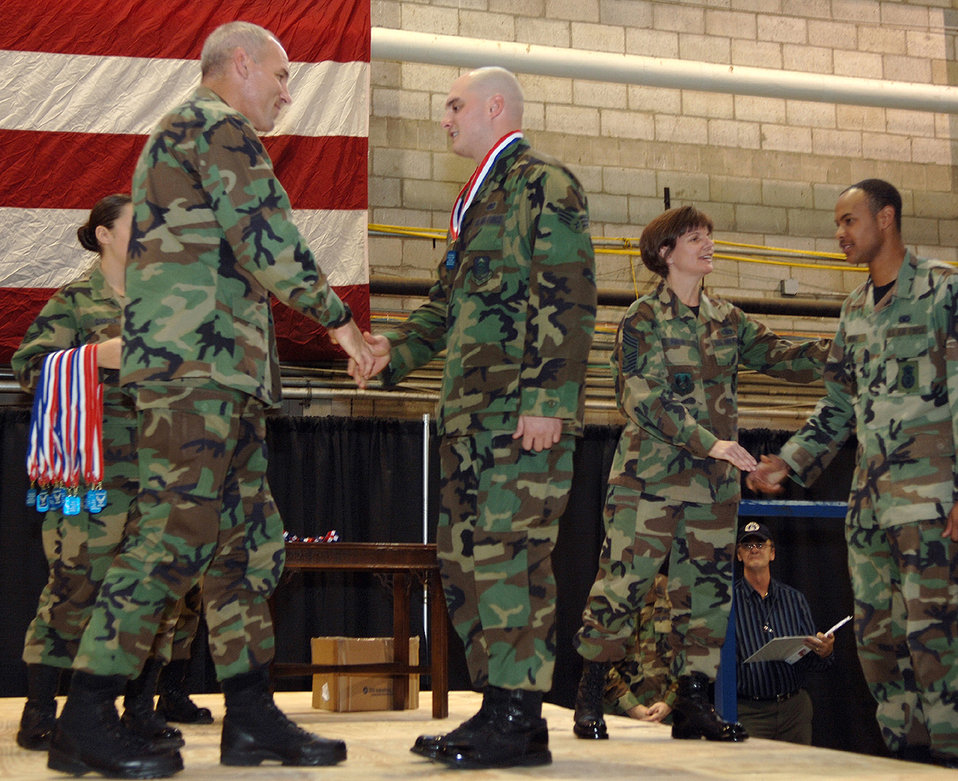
Welcome Home Heroes

From left, Col. Tom Schluckebier, 66th Air Base Wing commander, and Chief Master Sgt. Lisa Sirois, 66 ABW and Electronic Systems Center command chief master sergeant, congratulate returned deployed Airmen during the Heroes' Homecoming Jan. 19 at Hanscom Air Force Base, Mass.